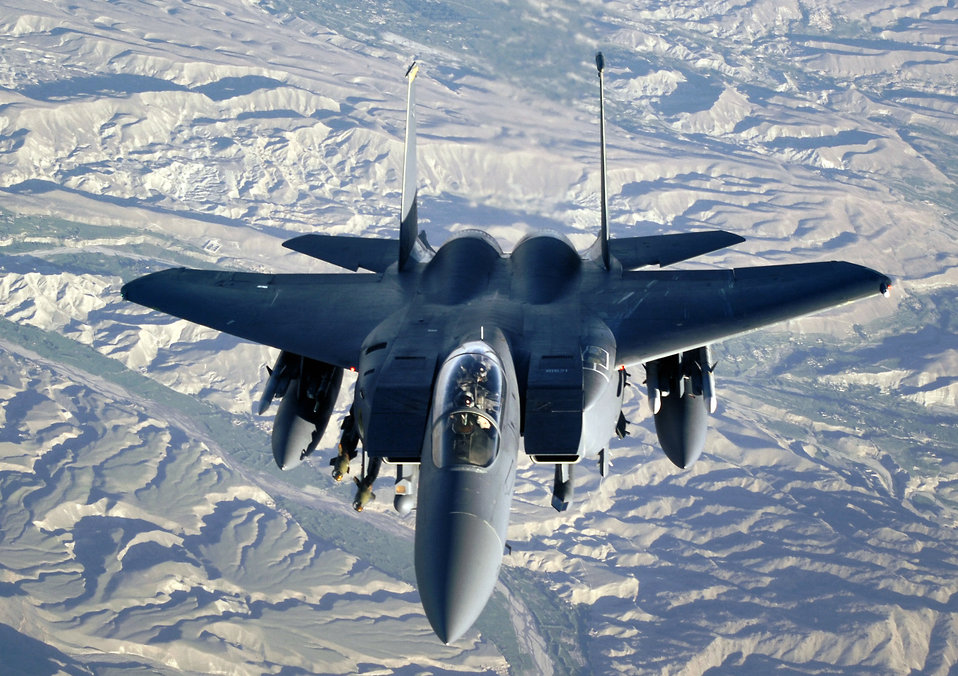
April 14 airpower summary: F-15s destroy enemy combatants

An F-15E Strike Eagle conducts a mission over Afghanistan. The F-15 frequently performs shows of force to deter enemy activities and protect coalition forces on the ground in Afghanistan and Iraq.